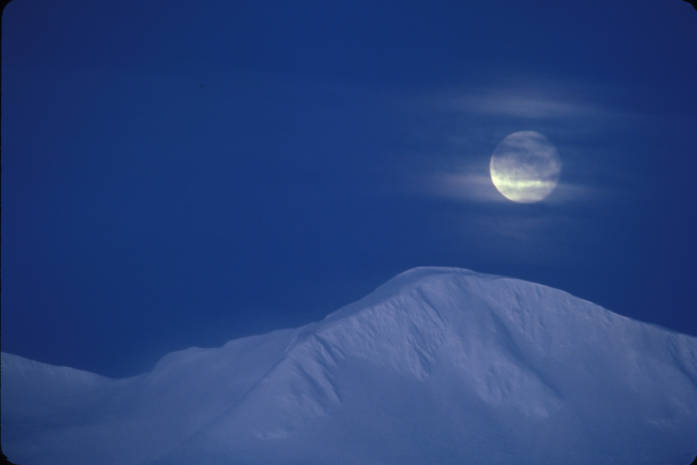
moonrise over Chiniak Bay

Kodiak National Wildlife Refuge